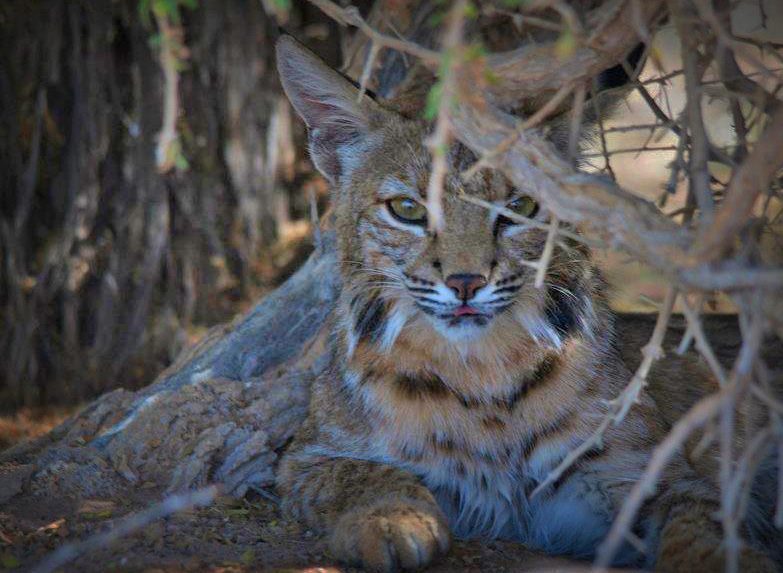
Bobcat at Sonny Bono NWR-2

These photos are taken in the evening very close to the Sonny Bono National Wildlife Refuge visitor center. (Photo by Mark Stewart/USFWS)

From the photographer: 'We have a lot of cover, a small pond and lots of rabbits. We have at least one family of Bobcats and I am expecting to see their kittens soon. They are used to people, but I use a 500 mm lens so as not to interfere with their normal activities.' -- Mark Stewart